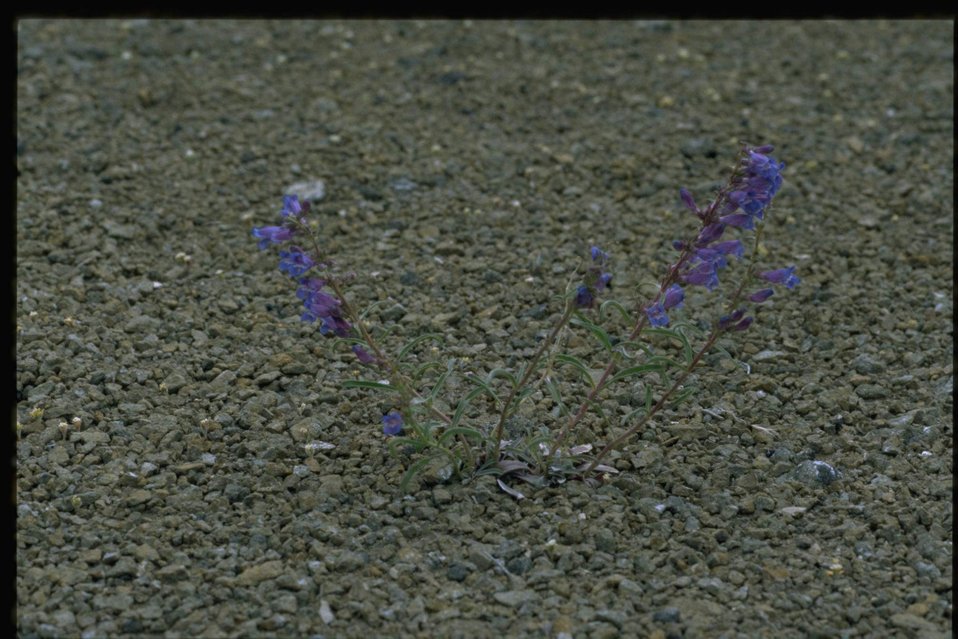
Far shot of penstemon wildflowers.